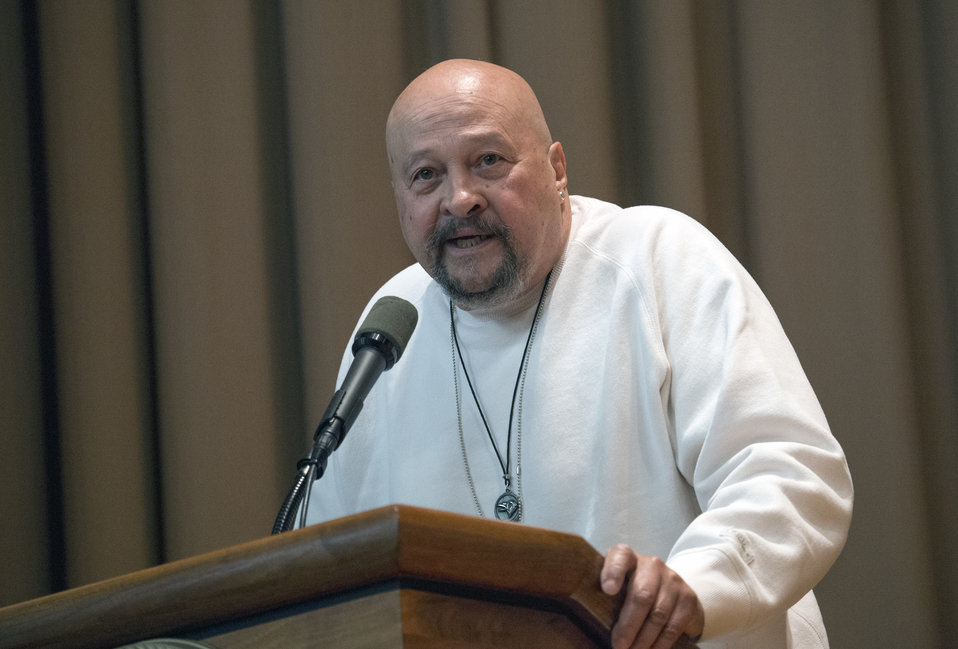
Maryland Choptico Band Piscataway-Conoy Tribe member Rico Newman makes remarks at the 2013 American Indian and Alaska Native Heritage Observance at the U.S. Department of Agriculture (USDA) on Thursday, Nov. 14, 2013 in Washington, D.C. The theme of this year’s event was “Guiding Our Destiny with Heritage and Traditions.”